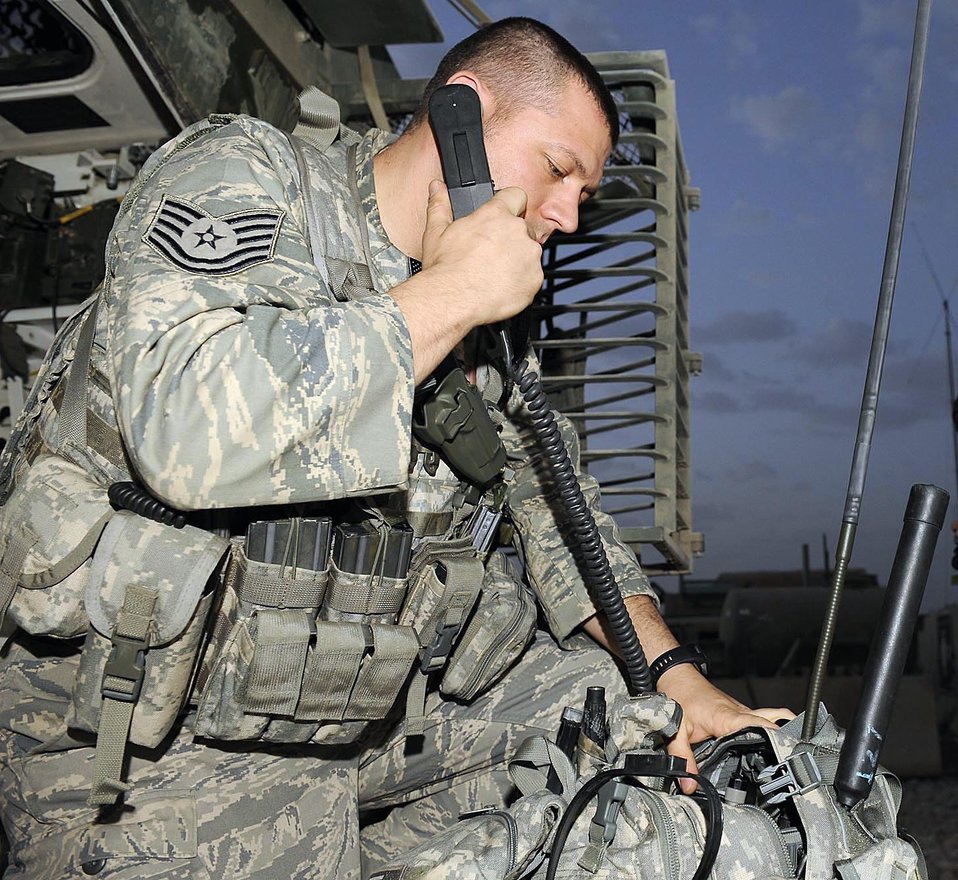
Airmen support Soldiers by putting bombs on targets

Tech. Sgt. Ben Jenkins conducts a radio check to make sure the portable radio is working before going out on a mission from Camp Liberty, Iraq, May 13. Sergeant Jenkins is a part of the tactical air control party working to ensure the Soldiers on the ground have the air support they need to get their mission done. Sergeant Jenkins is an 82nd Expeditionary Air Support Operations Squadron tactical command and control specialist.